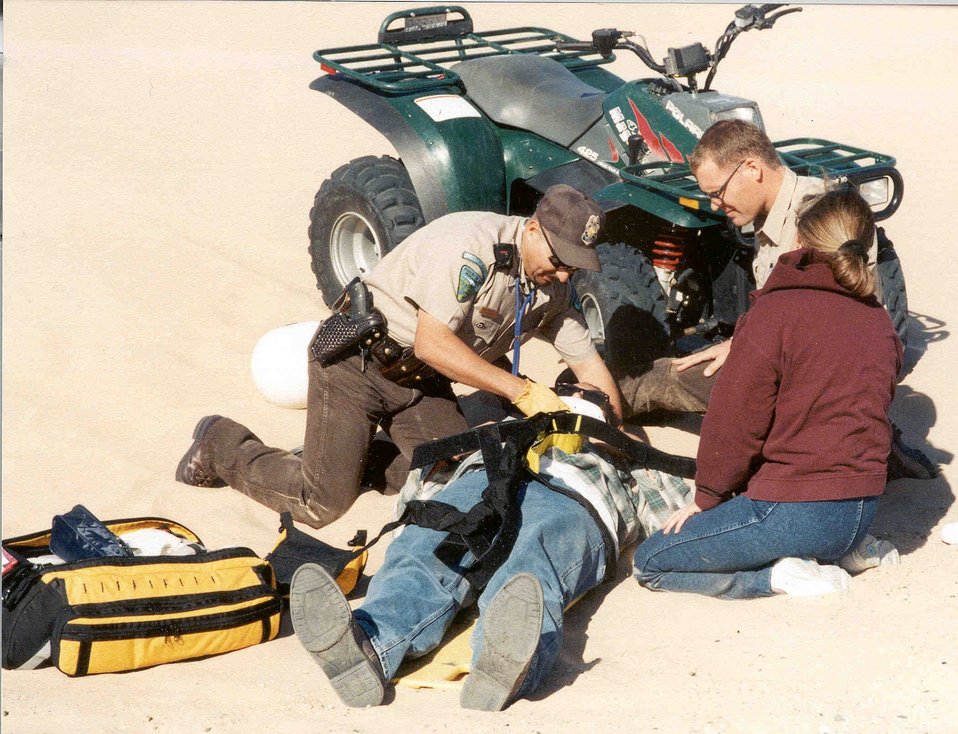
Law Enforcement Ranger using his EMT skills on a victim in the Imperial Sand Dunes